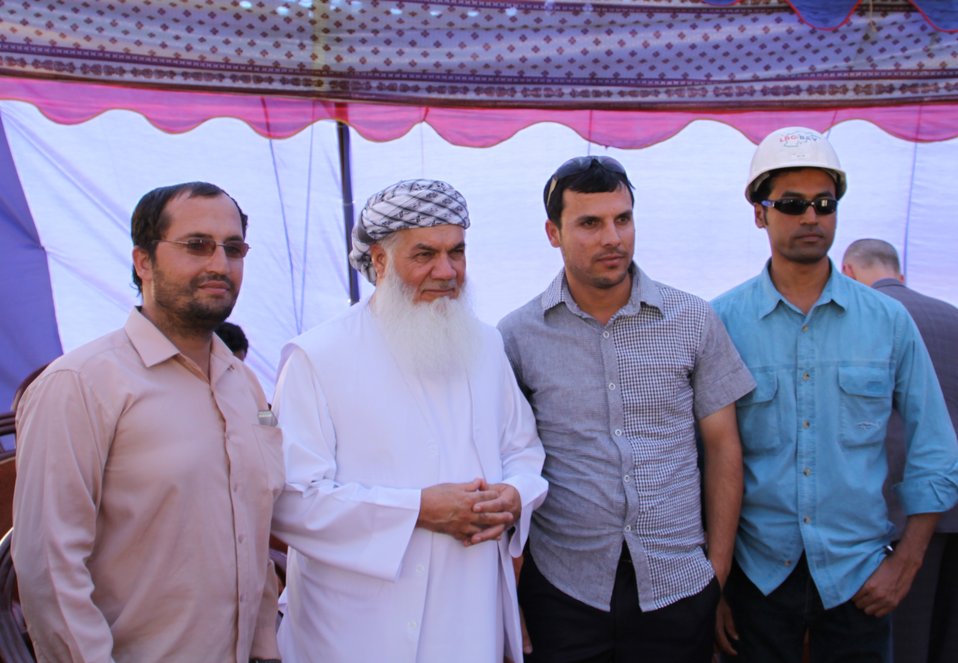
105 MW Tarakhil Power Plant Handover